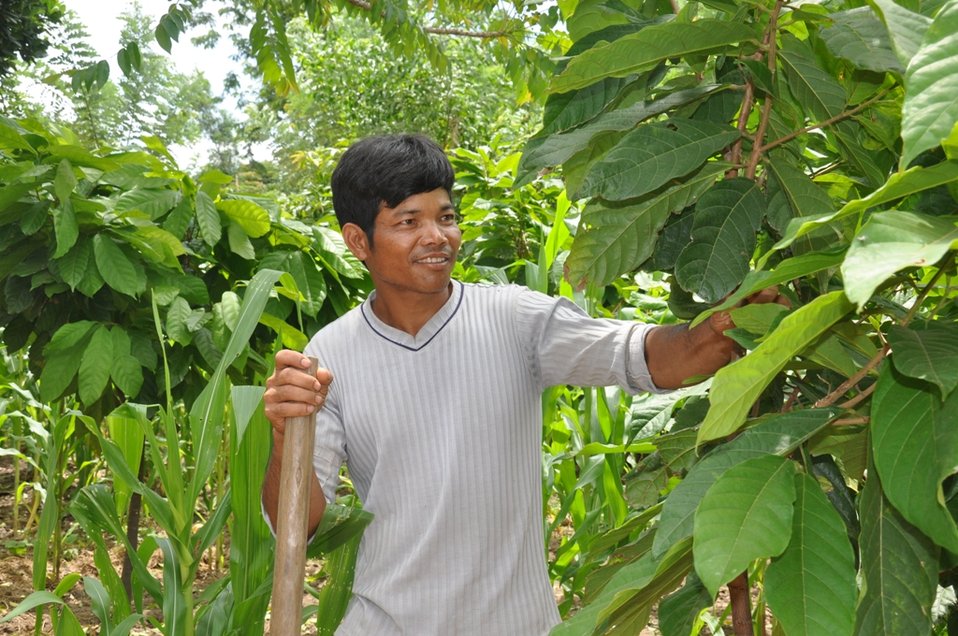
A farmer is learning to profit from cocoa in Dak Lak Province of central Vietnam.

USAID promotes sustainable cocoa farming in rural communities of central Vietnam.